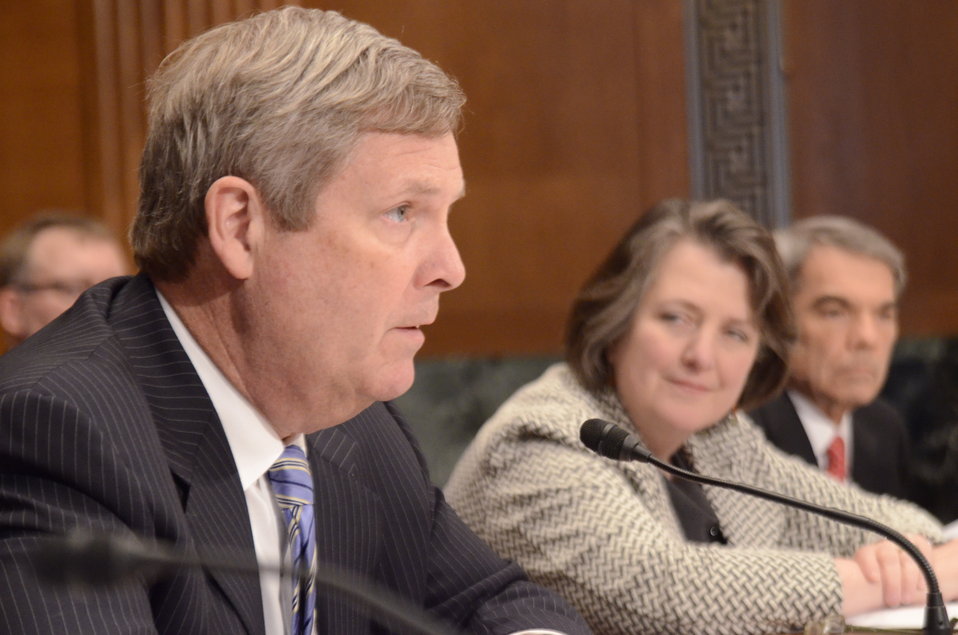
Agriculture Secretary Tom Vilsack and Agriculture Deputy Secretary Dr. Kathleen Merrigan testify before the Senate Agriculture Appropriations Committee on the fiscal year 2013 budget at the Dirksen Senate Office Building in Washington, D.C., on Thursday, March 29, 2012.